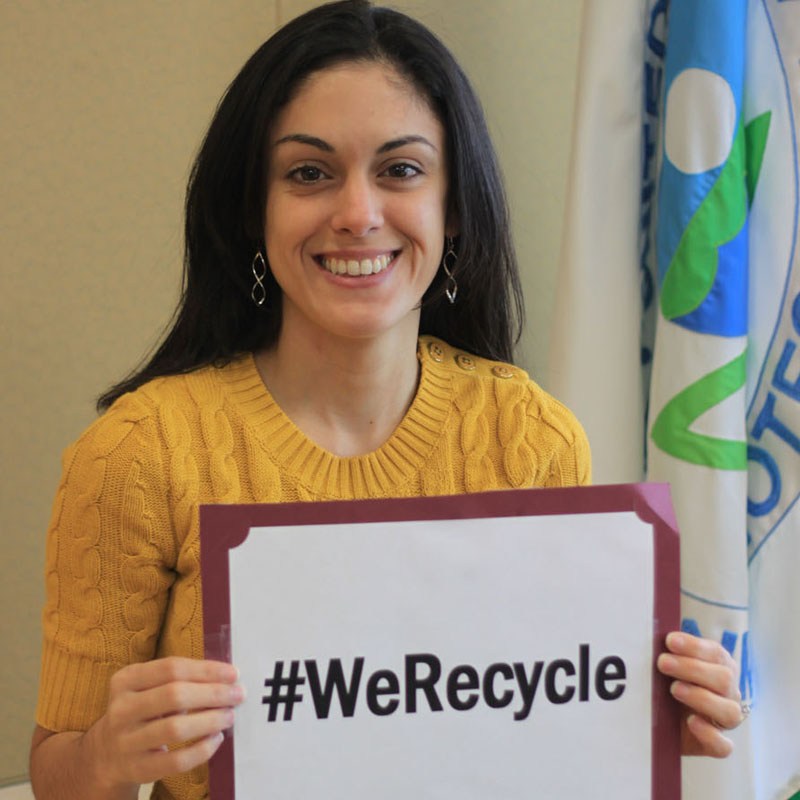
EPA Employee Lilybeth Recycles

At EPA, #WeRecycle. Learn how you can too: www2.epa.gov/recycle